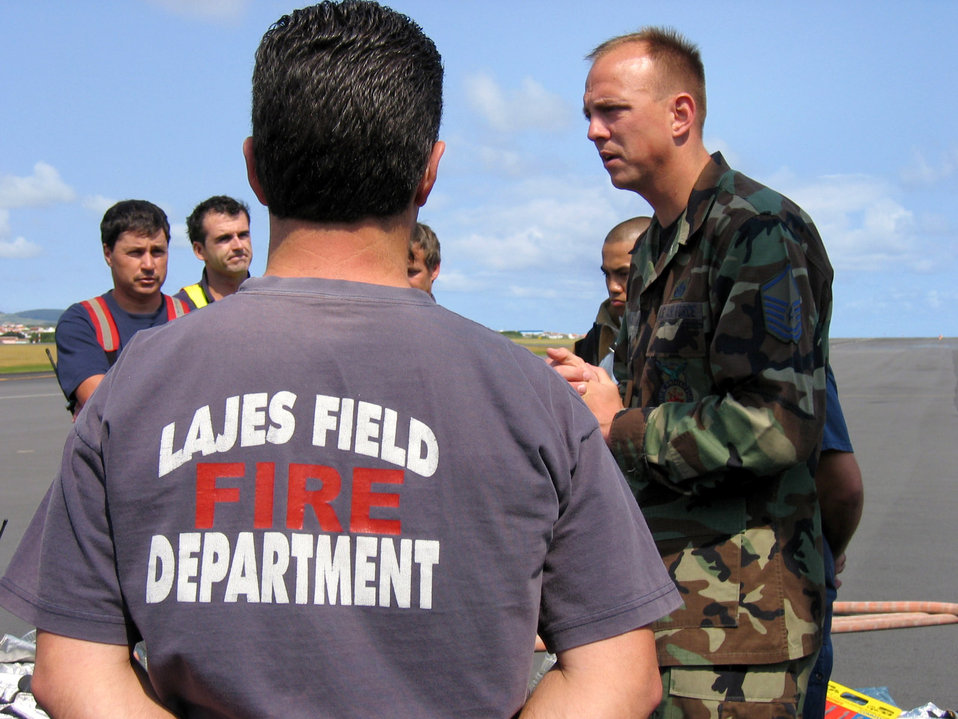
American, Portuguese firefighters work, train together

Master Sgt. Michael Burns de-briefs firefighters after a flightline exercise June 21 at Lajes Field, Portugal. Portuguese and American firefighters routinely work together to save lives and property.